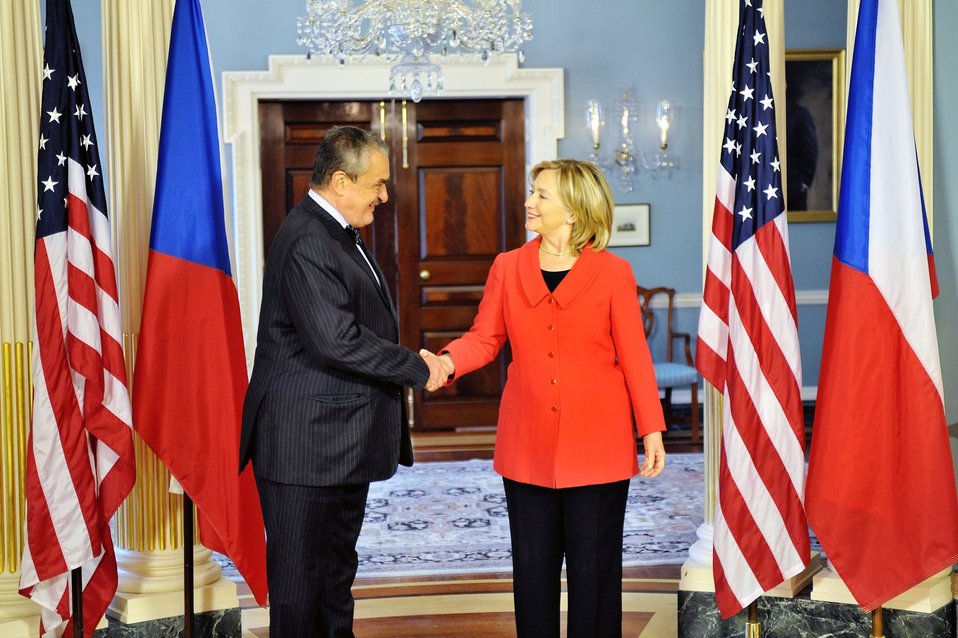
Secretary Clinton Shakes Hands With Czech Foreign Minister Schwarzenberg

U.S. Secretary of State Hillary Rodham Clinton shakes hands with Czech Foreign Minister Karel Schwarzenberg after their bilateral meeting at the U.S. Department of State in Washington, D.C., October 6, 2010.